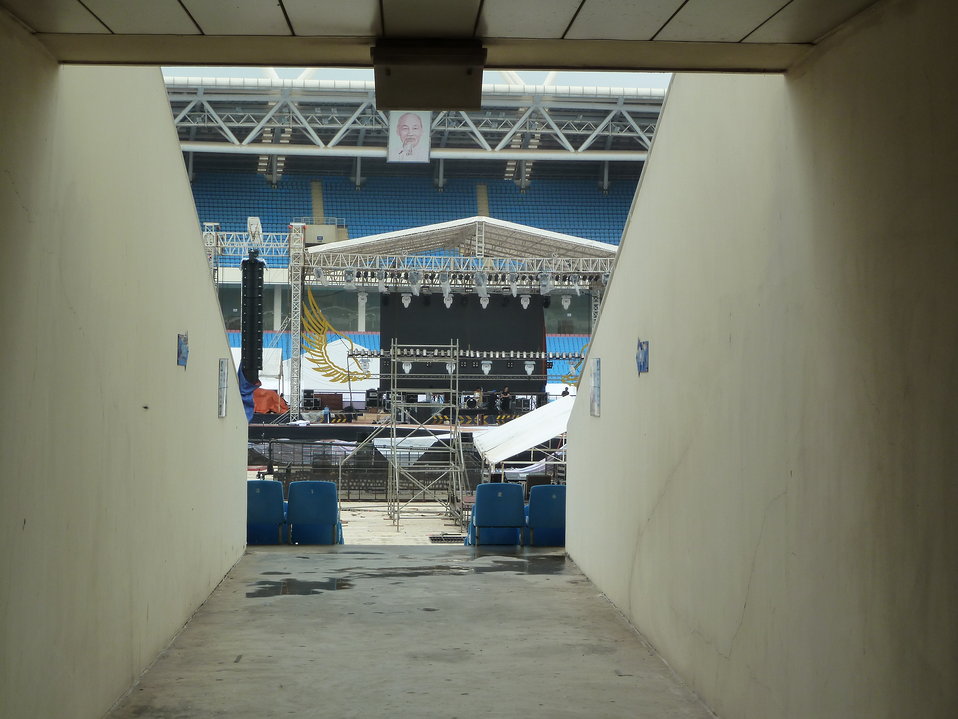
Preparations under way for big MTV EXIT concert in Hanoi on May 26, 2012

Co-sponsored by USAID.